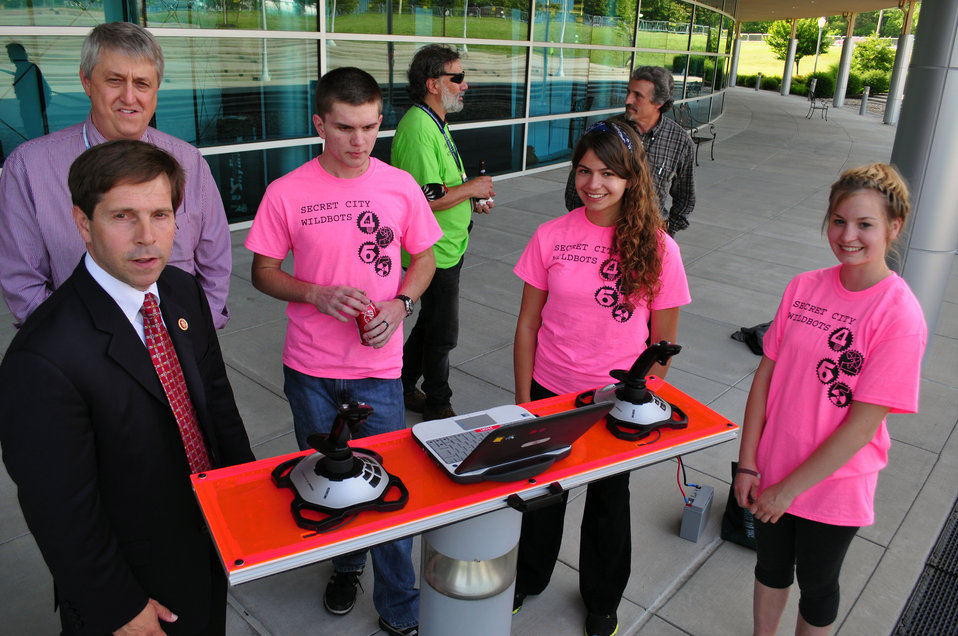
Congressman Chuck Fleischmann with Oak Ridge HS Robotics Team Tennessee Valley Corridor 2013 Oak Ridge

13-062 DOE photo Lynn Freeny 5-29-2013 Oak Ridge Tennessee